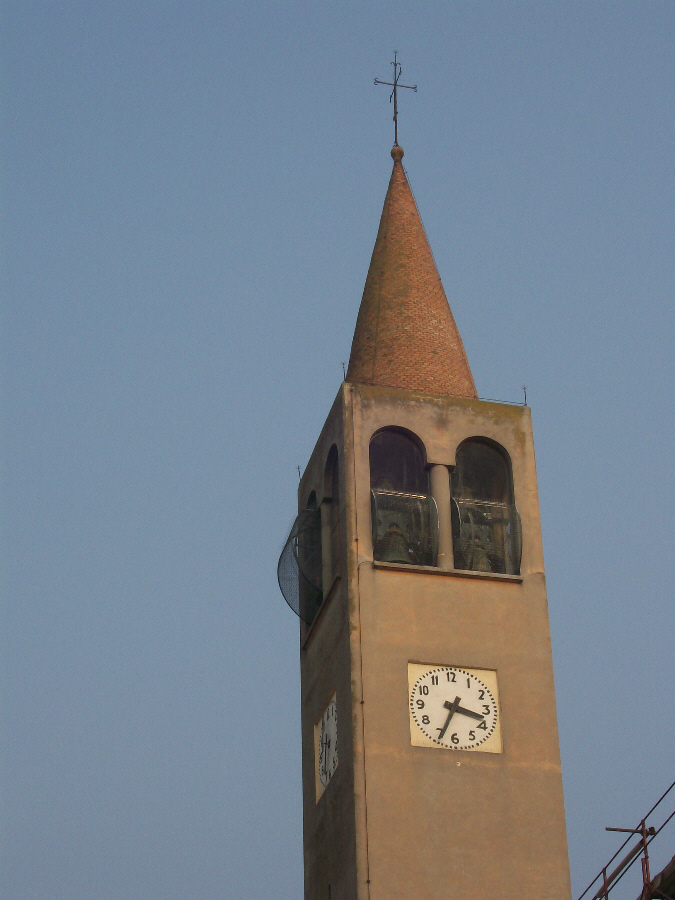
Italiano: Campanile della chiesa parrocchiale di San Giorgio martire prima dei lavori